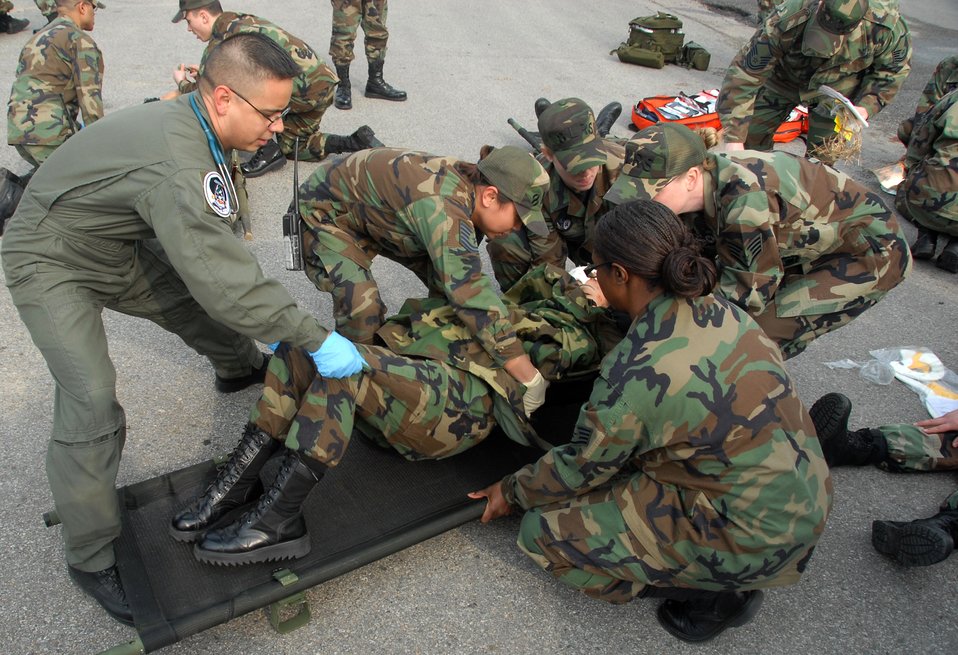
Wolf Pack Warriors

Members of the 8th Fighter Wing disaster response team place a simulated victim on a stretcher Feb. 9 during a major accident response exercise at Kunsan Air Base, South Korea. The accident, designed to provide realistic training for emergency response teams, simulated a major vehicle accident with multiple victims.